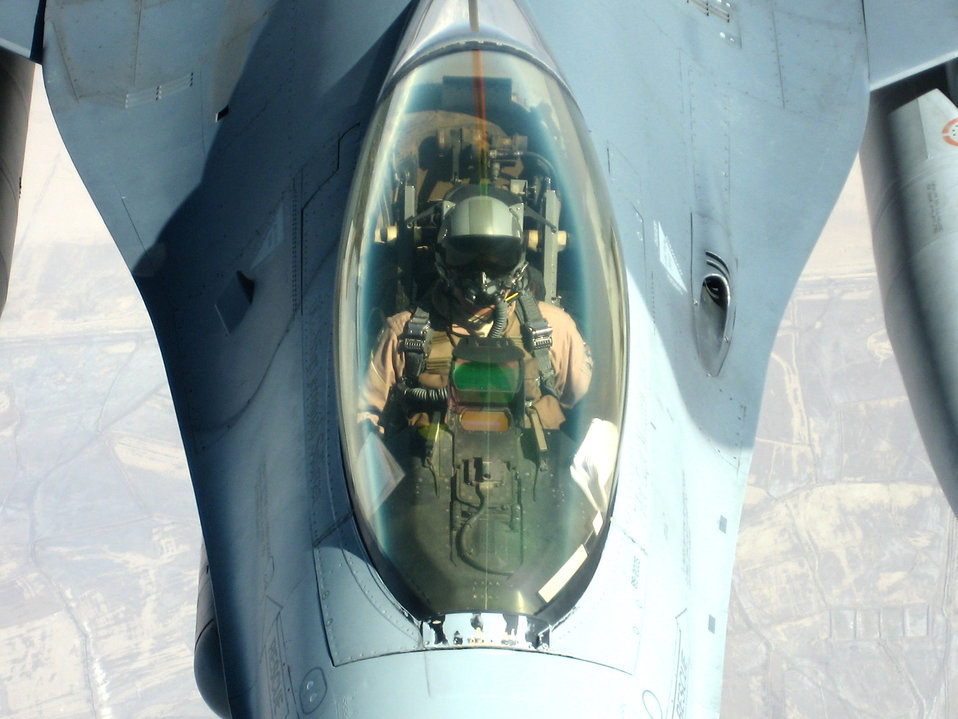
Refueling the fight

An F-16 Fighting Falcon from Balad Air Base, Iraq, takes fuel from a KC-10 Extender over Iraq Nov. 20. The KC-10 refueled two jets that afternoon in support of Operation Iraqi Freedom. The KC-10 aircrew is deployed in support of the 380th Air Expeditionary Wing.